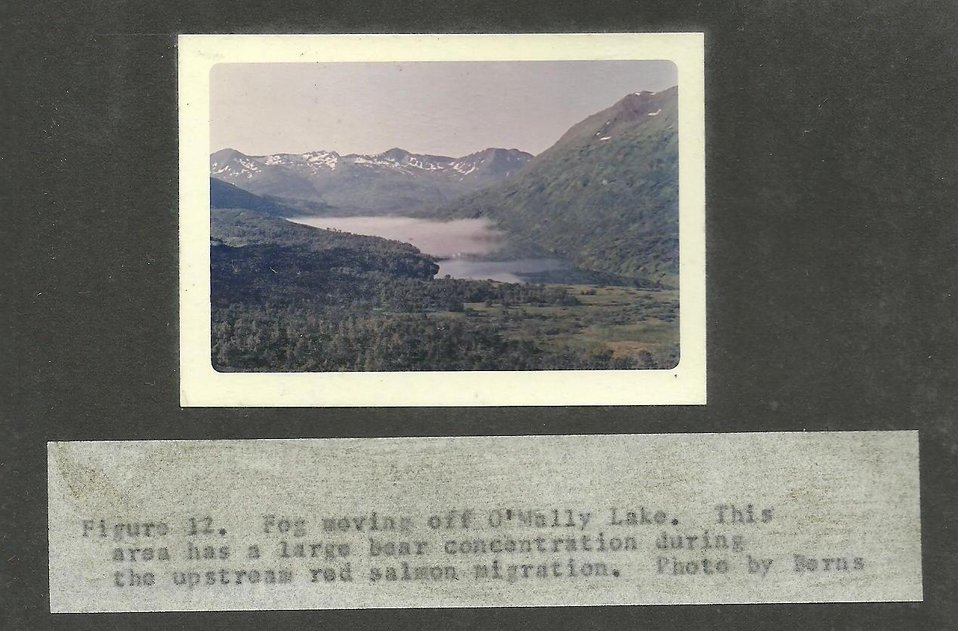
(1964) O'Malley Lake

Credit: USFWS

Source and Contact: Kodiak National Wildlife Refuge